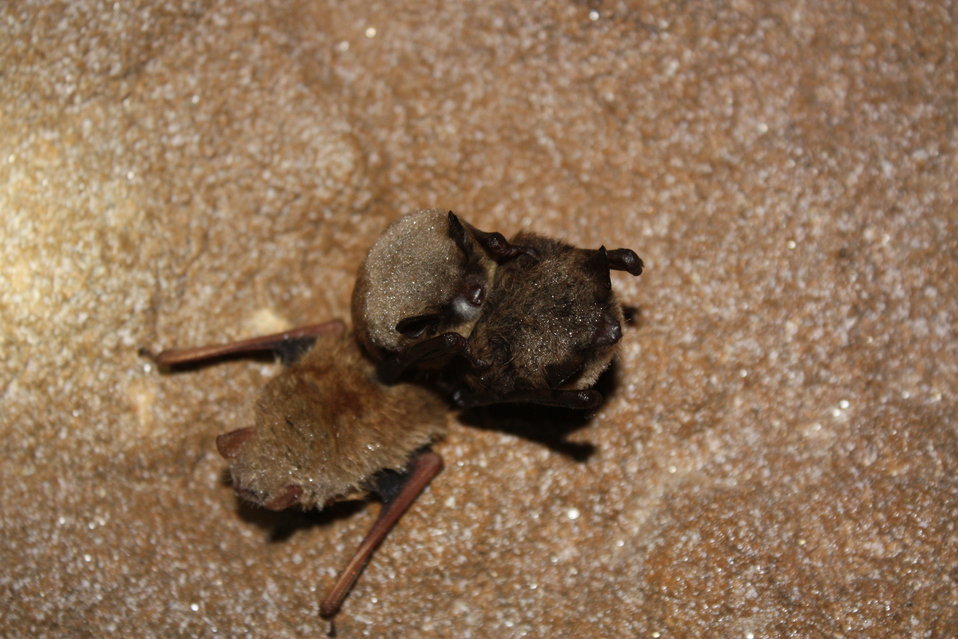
Little brown bat with WNS